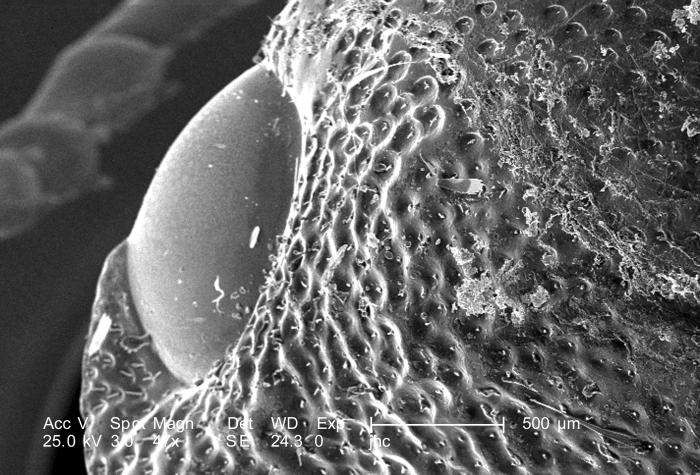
At a low magnification of 47X, this scanning electron micrograph (SEM) focused on the head region of an adult 'figeater' beetle, Cotinis mutabilis. In this particular view, one of the insect's two compound eyes, i.e., right eye, is visualized. For even greater magnifications of the surface of the eye, see PHIL 9950, 9951, and 9952.